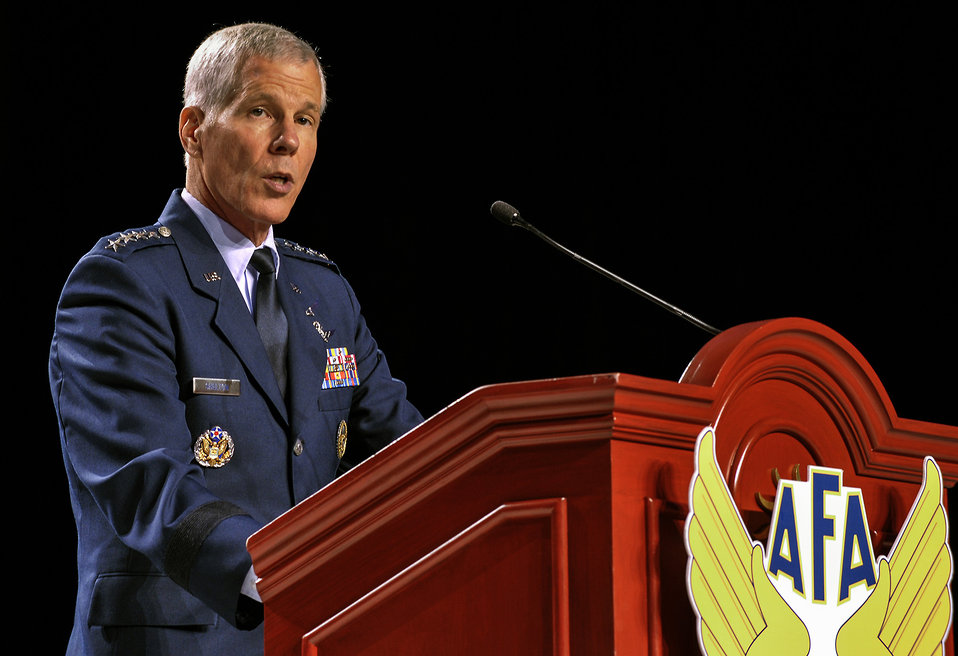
Air Force Space Command at AFA

Gen. William Shelton, commander, Air Force Space Command, addresses the Air Force Association's annual Air & Space Conference and Technology Exposition in Washington D.C. on August 17, 2012. The seminar discussed the challenges of integrating air, space and cyberspace into one coordinated process.